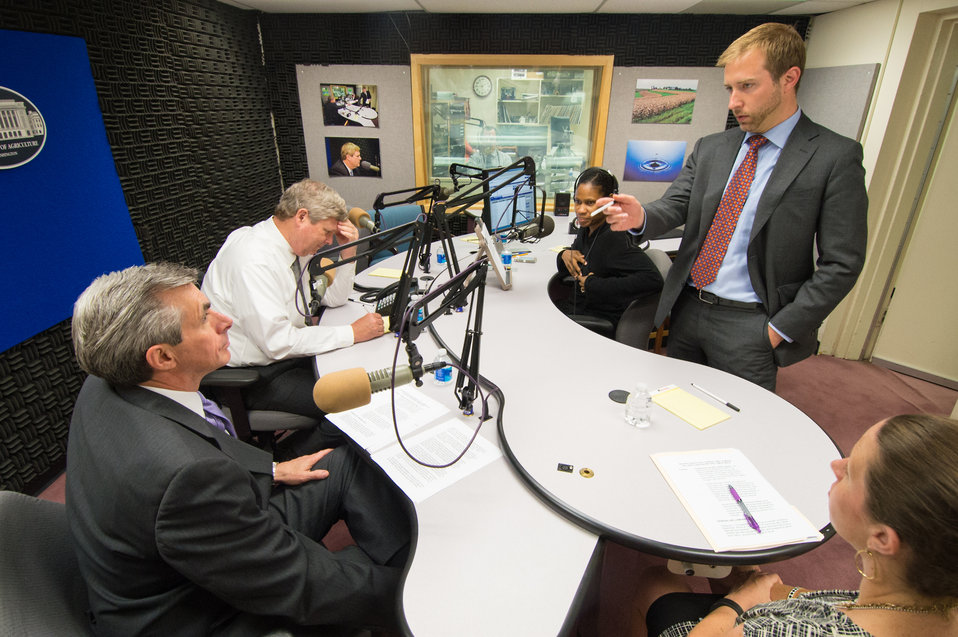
U.S. Department of Agriculture (USDA) Office of Communications (OC) Press Secretary Cullen Schwarz explains the protocol of a media call at USDA’s radio studio to Rear Admiral James Barnett (retired) prior to the start of the event at USDA on Thursday, May 22, 2014. Agriculture Secretary Tom Vilsack joined by U. S. Army General William Wallace (retired) and Burke County, GA School Food Service Director Donna Martin to discuss recent attempts to undermine child nutrition standards and the impact that has on military.